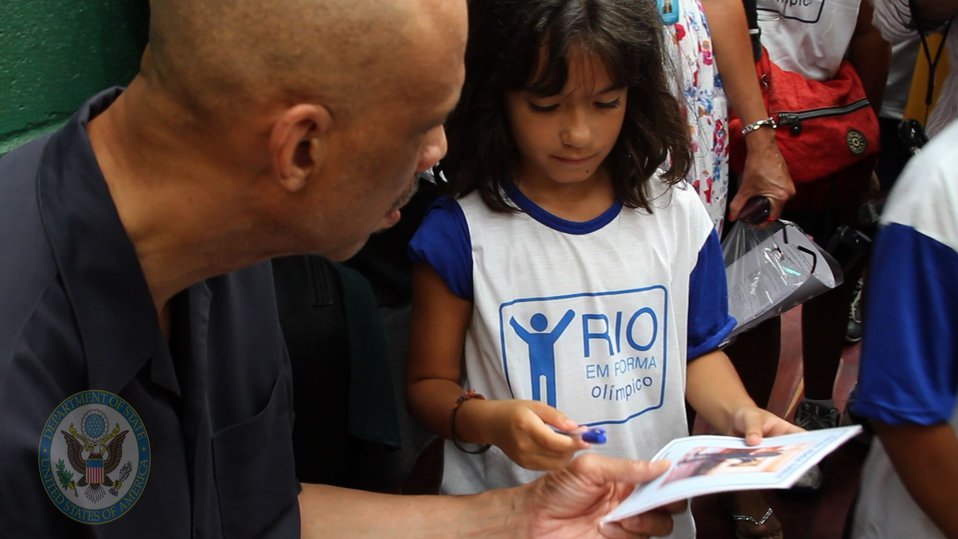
Global Cultural Ambassador Kareem Abdul-Jabbar Engages Youth

Hall-of-Famer and Global Cultural Ambassador for the U.S. Department of State Kareem Abdul-Jabbar speaks with a young, Brazilian girl in Rio de Janeiro, Brazil, on January 26, 2012.